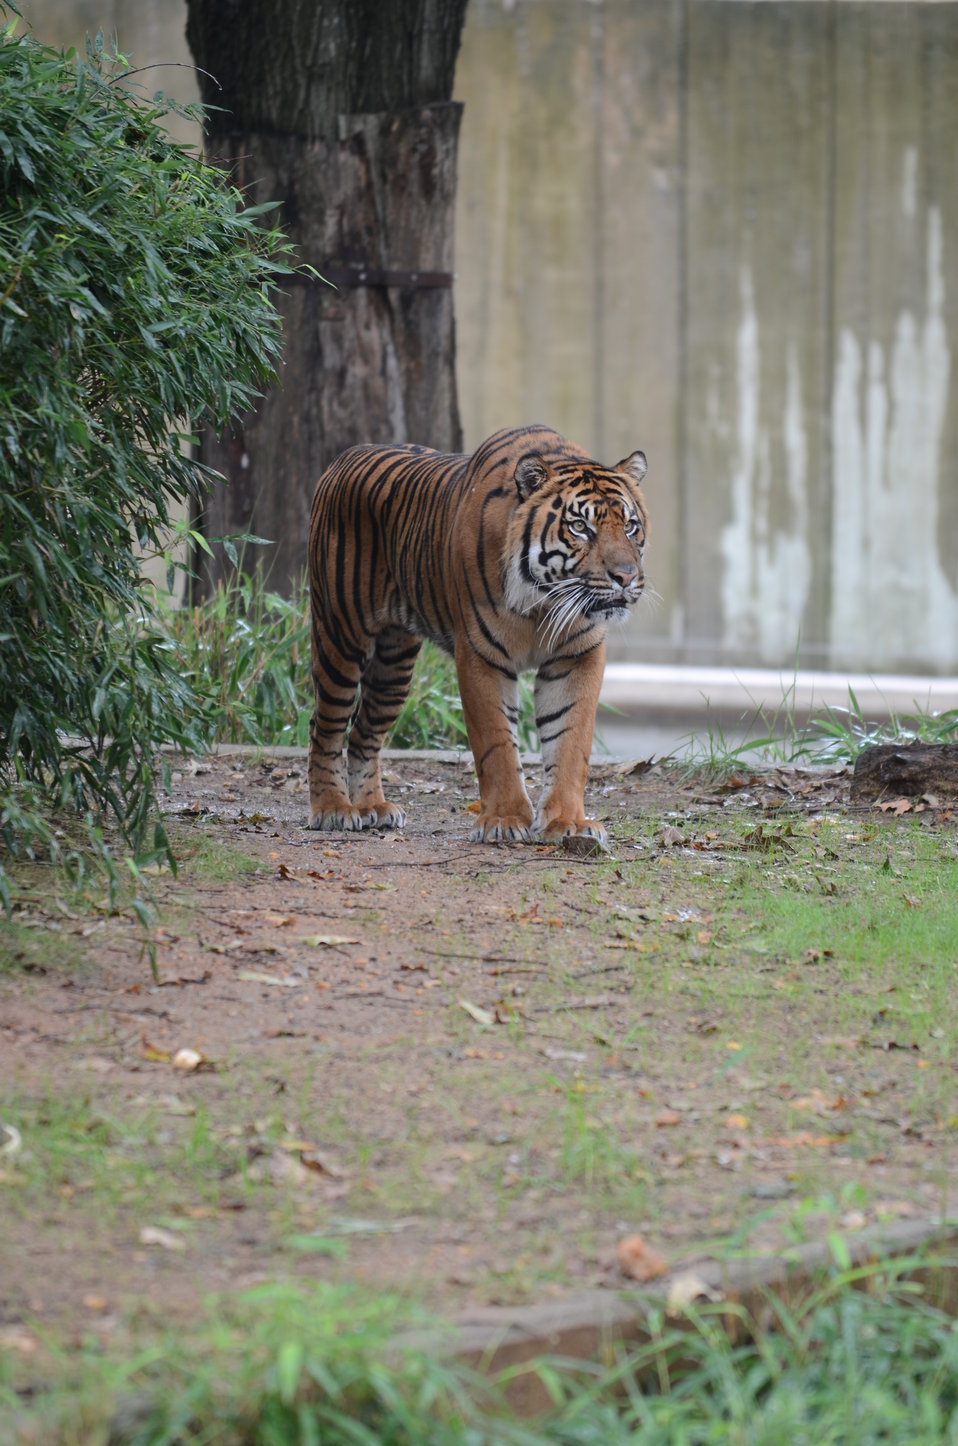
Save Vanishing Species Stamp First Day of Issue